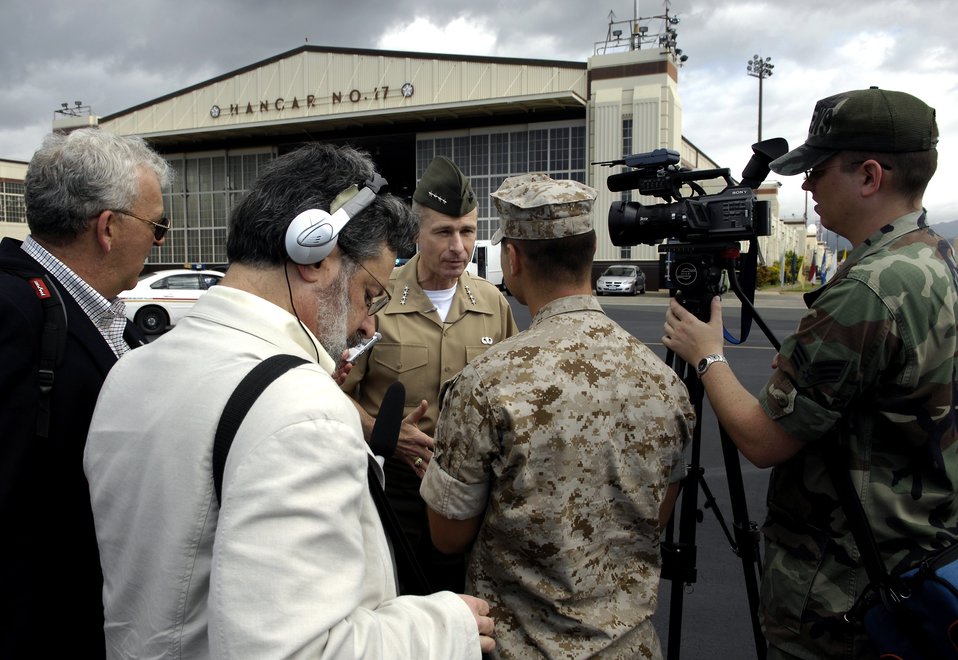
General Pace visits Hawaii

Gen. Peter Pace, chairman of the Joint Chiefs of Staff, address questions during an interview at Hickam Air Force Base, Hawaii, on Feb. 9.